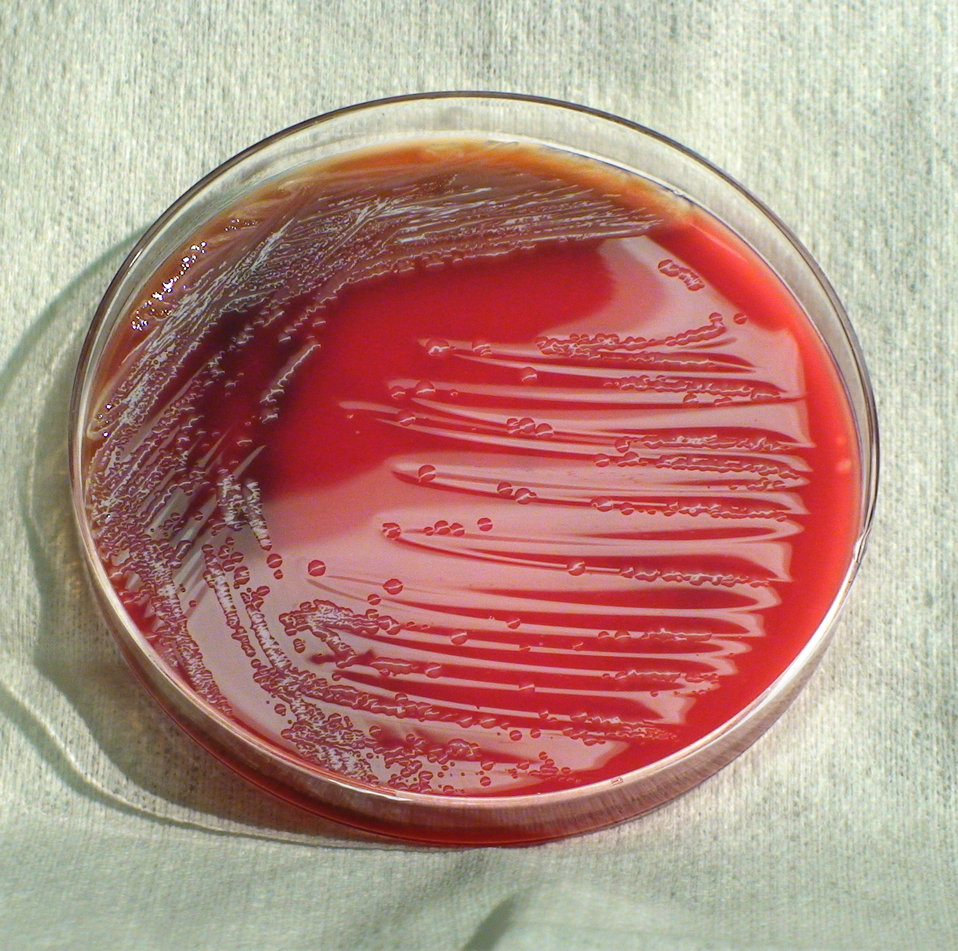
This photograph depicts the colonial morphology displayed by Gram-negative Morganella morganii bacteria, which was grown on a medium of sheep's blood agar (SBA), for a 24 hour time period, at a temperature of 37�C. See PHIL 12454, for a closer view of these bacterial colonies.